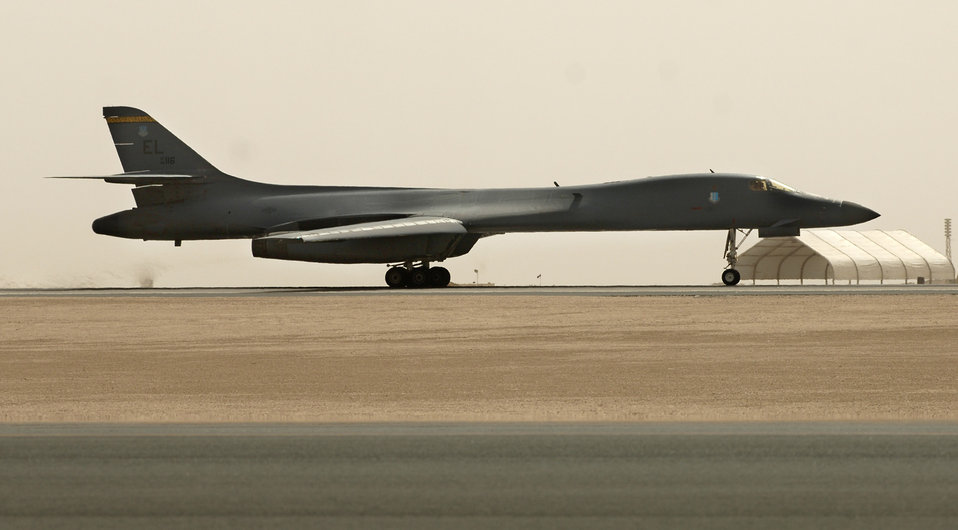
Operation Enduring Freedom

Southwest Asia -- A B1-B Lancer Bomber prepares to take off and provide a show of force for Coalition forces near Ad Diwaniyah. Joint Terminal Attack Controller confirmed the show of force to be successful.